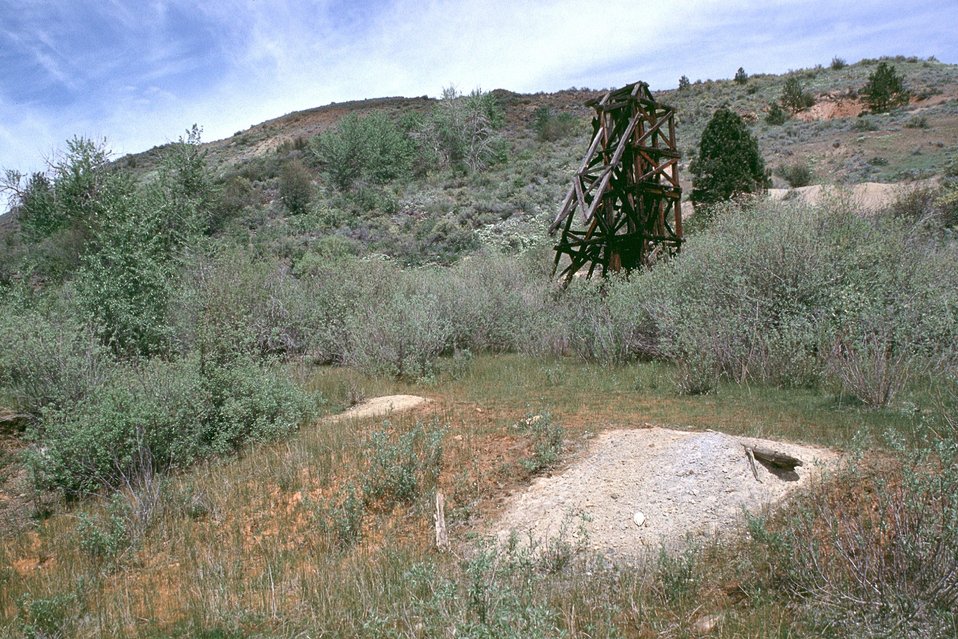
AML Poorman, Vale District, Oregon. Repository.